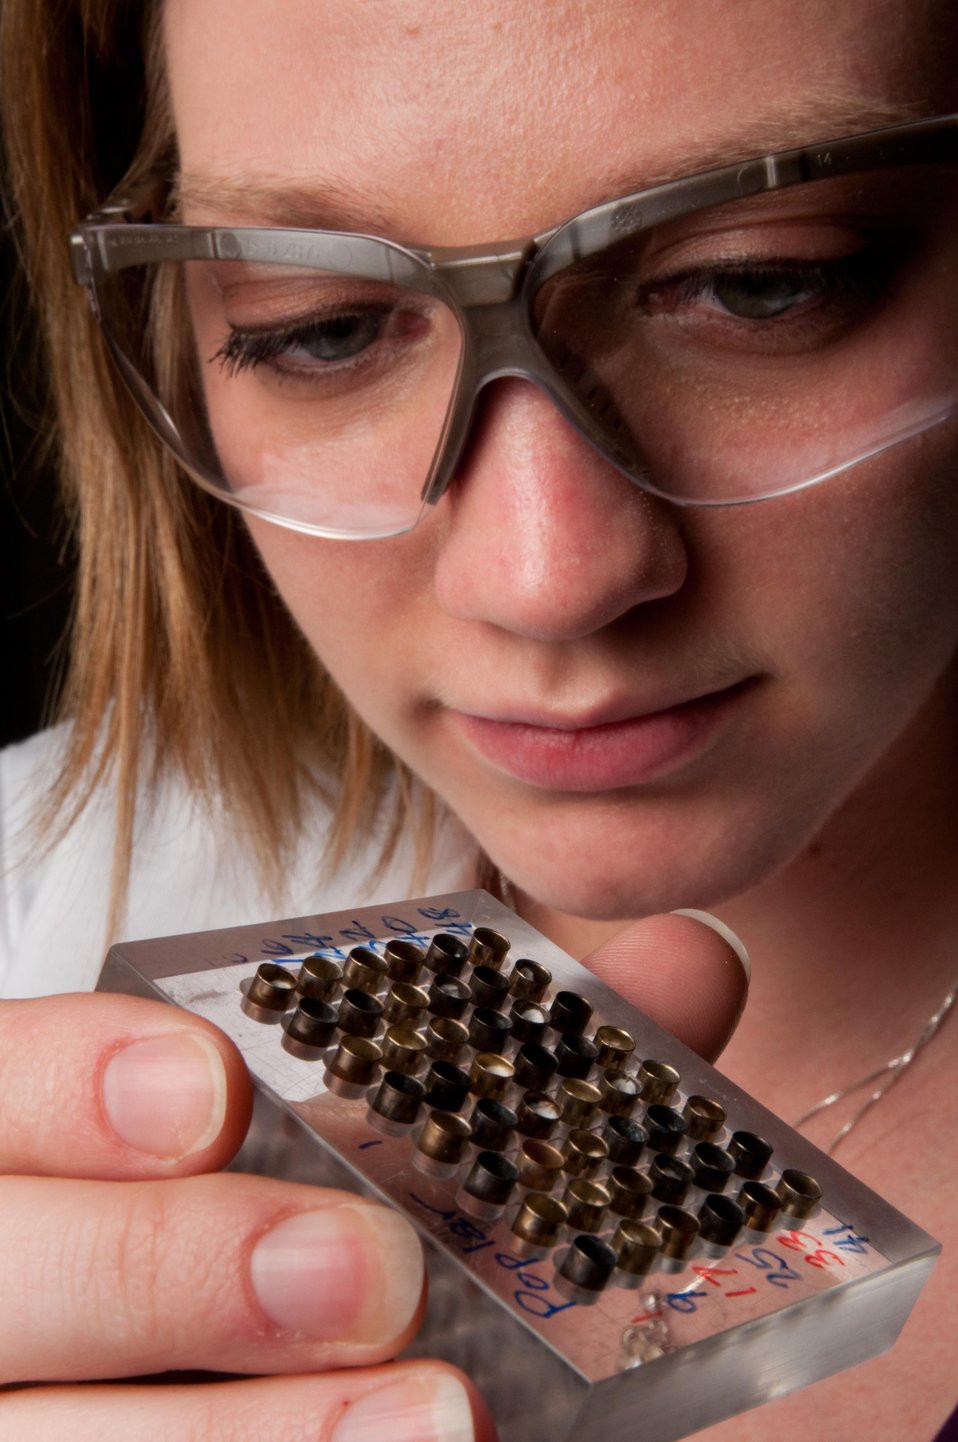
SHOWN IS A RESEARCHER FROM NREL'S CHEMICAL AND CATALYST SCIENCE GROUP.

A researcher examines 48 poplar tree samples about to be analyzed by the lab's new high throughput pipelines. An understanding of how enzymes break down cell walls to free the sugars is crucial to finding the most cost-effective biomass for transportation fuel.